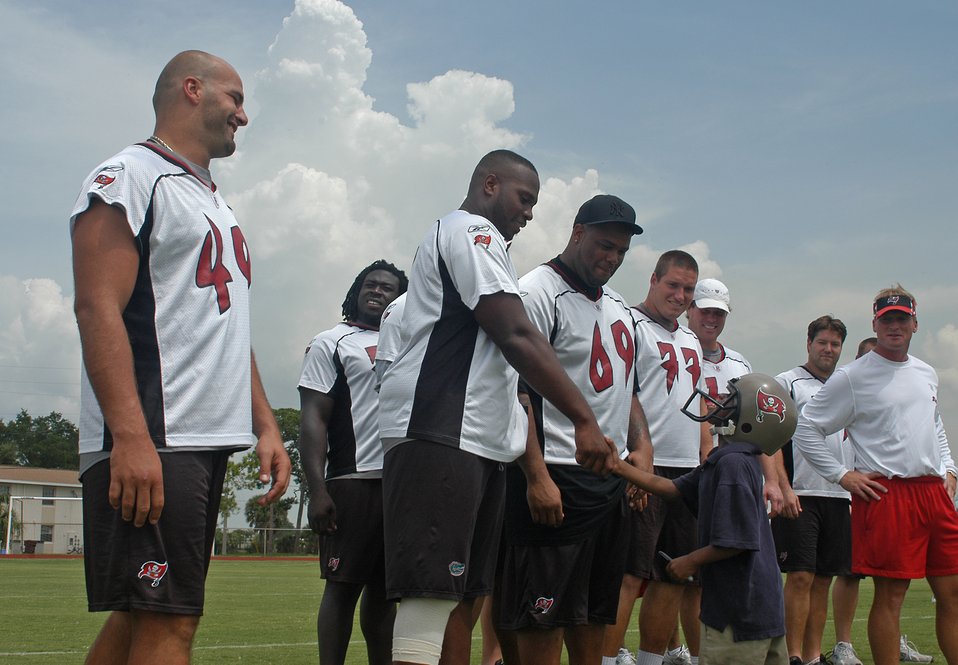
Tampa Bay plays at MacDill

James Lyons, 7, shakes hands with linemen from the Tampa Bay Buccaneers during the pre-game, walkthrough practice held at MacDill Air Force Base, Fla., on Aug. 18. The practice was closed to the general public but open to base personnel. Airmen who attended the practice were able to get an up-close look at the 2006 Buccaneers team.